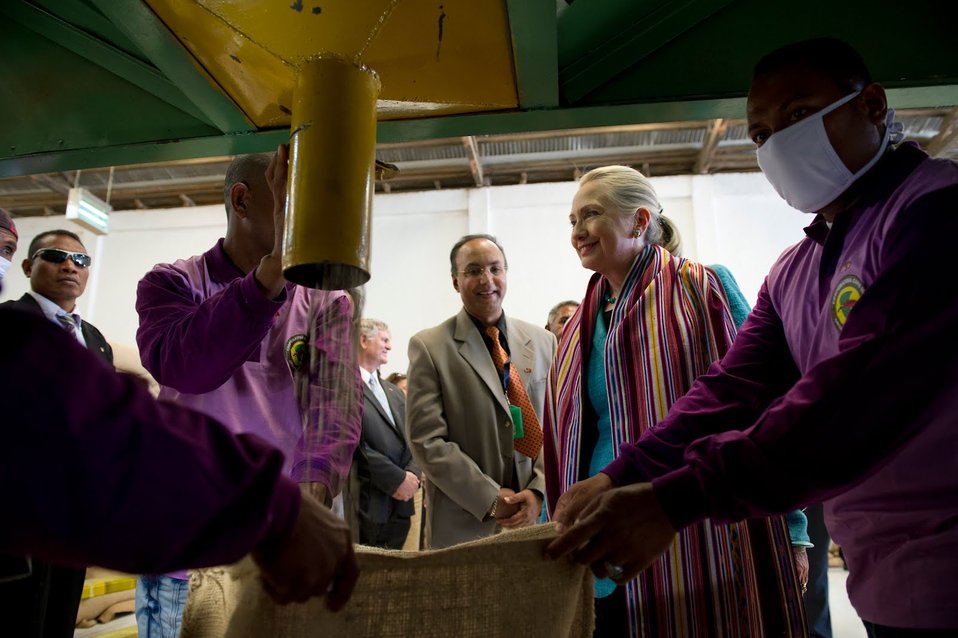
Secretary Clinton at Cooperativa Cafe Timor

U.S. Secretary of State Hillary Clinton watches workers bagging coffee at the Cooperativa Cafe Timor in Dili, Timor-Leste, September 6, 2012. The cooperative started with coffee but has since diversified their crops to include cloves, vanilla, cacao, and cassava, among others.